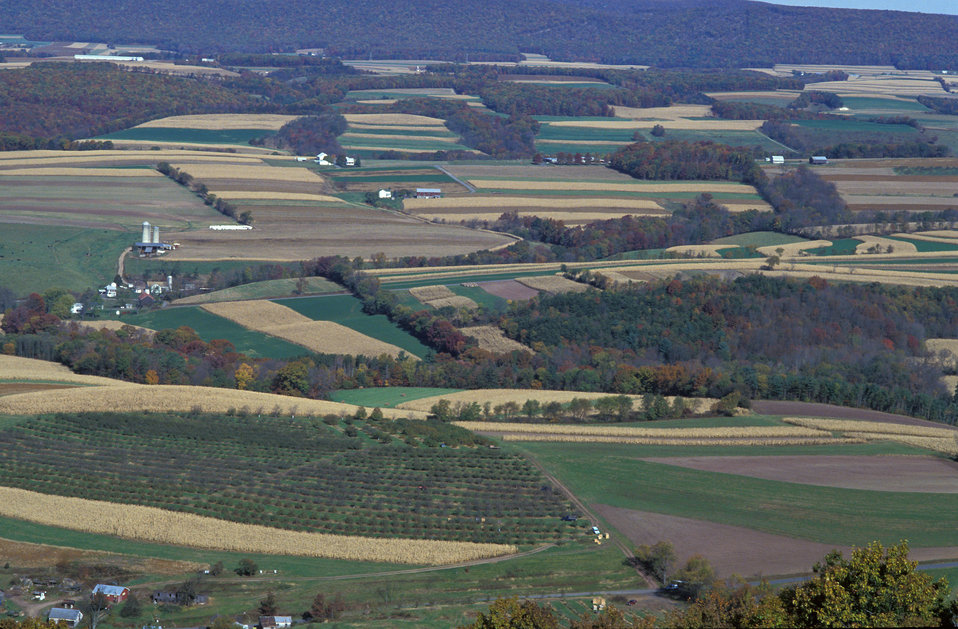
This is an aerial view of the Mahantango Creek watershed near Klingerstown, PA. The combination of land use, soil properties, and hydrogeology largely determine vulnerability of surface and groundwater contamination by agricultural activities.